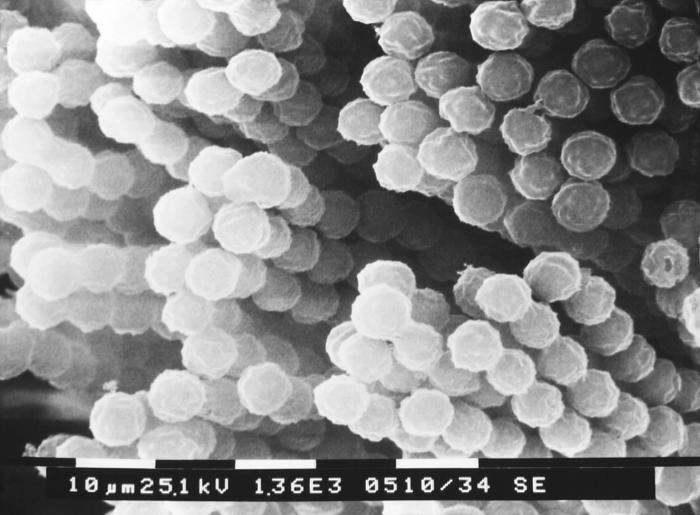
This scanning electron micrograph (SEM) depicts numbers of chains of Aspergillus specie fungal conidiospores. For a colorized version of this image, see PHIL 13368.